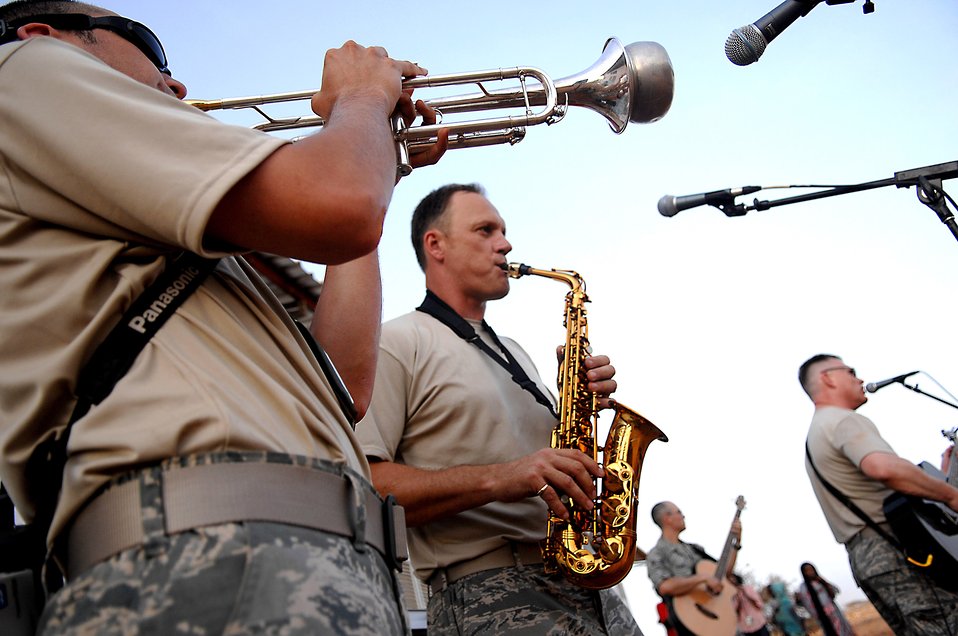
U.S. Air Force Band Concert, Djibouti

The U.S. Air Force Central Command band, Falcon, performs a concert for villagers May 22 in Negad, Djibouti. The band is deployed in support of Combined Joint Task Force - Horn of Africa out of Camp Lemonier, Djibouti.